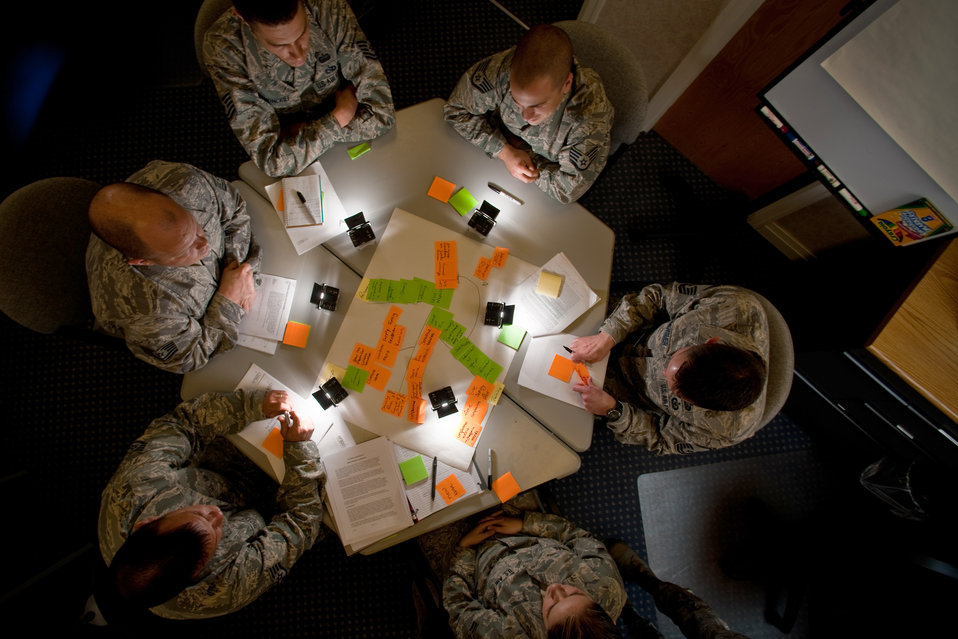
8 steps

Airmen complete a hands-on scenario during an Air Force Smart Operations for the 21st Century course, titled